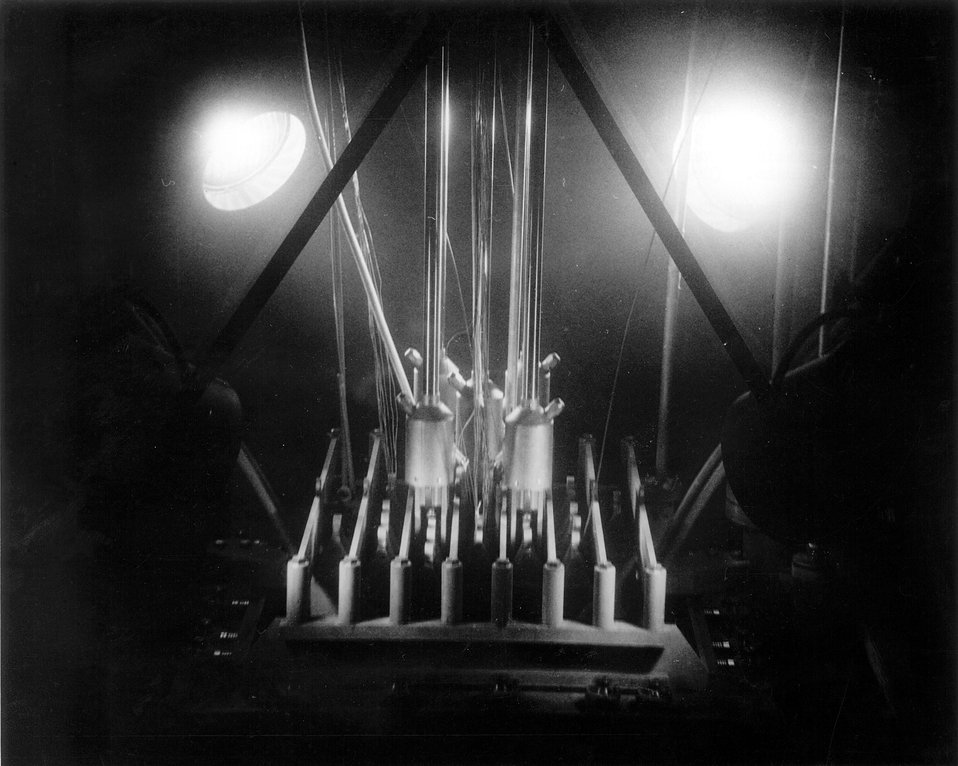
Core of SPERT IV in 1963. Circa 1974.